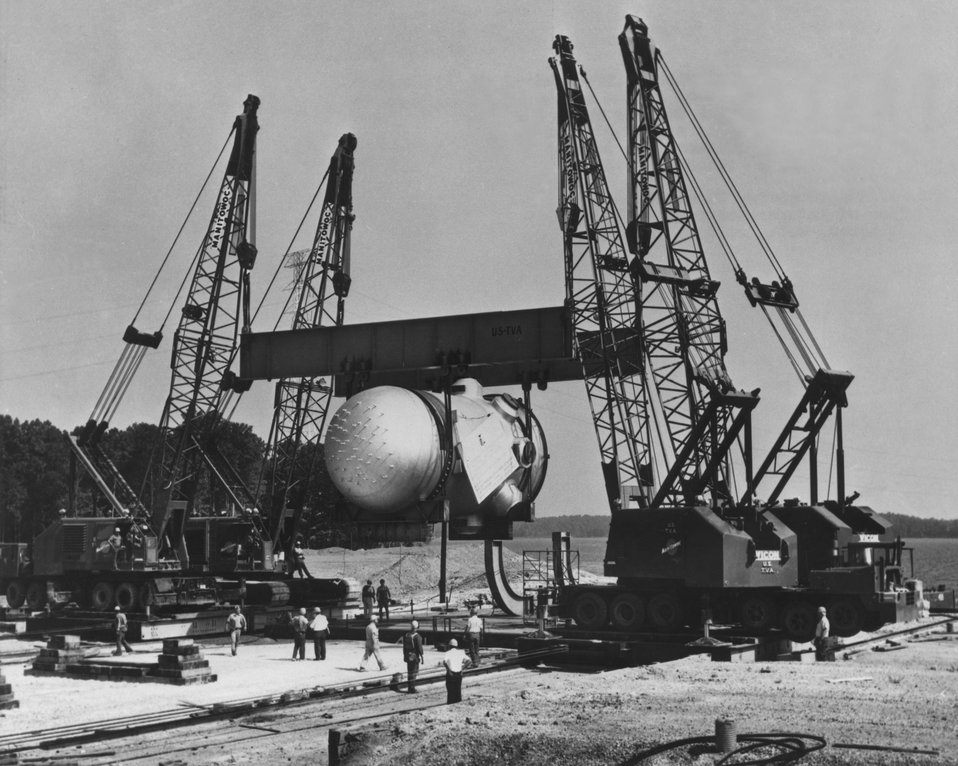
The arrival of a nuclear pressure vessel at the construction site for TVA's Sequoia Nuclear Power Plant near Daisy, Tennessee. Circa 1973.